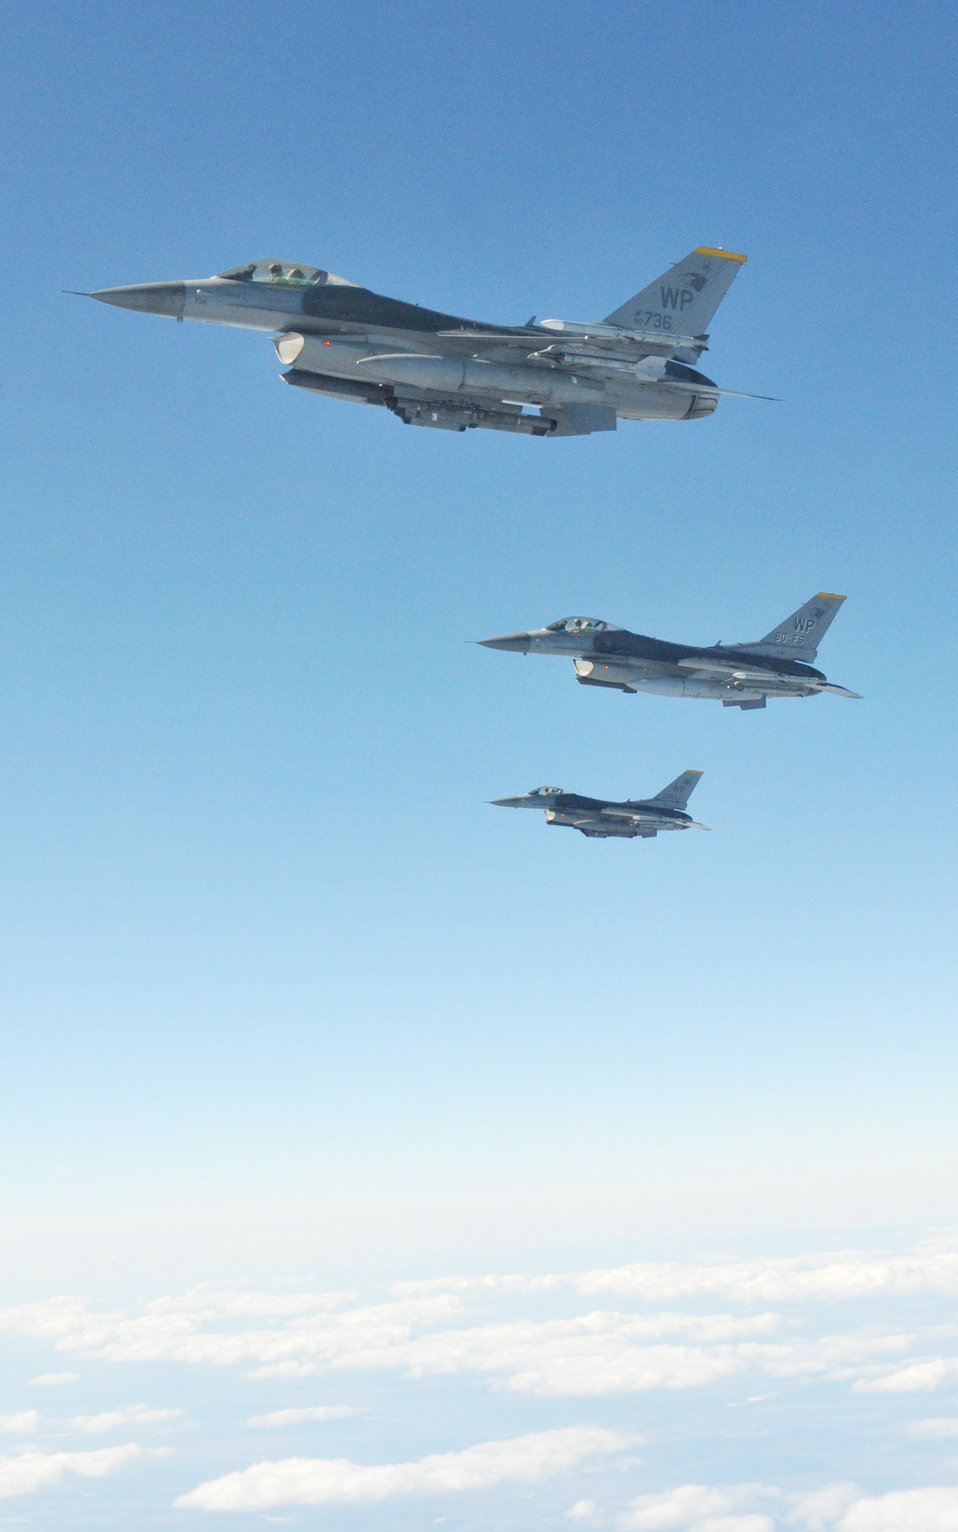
F-16s participate in Red Flag-Alaska

Three F-16 Fighting Falcons pilots maintain their position as they wait for the last aircraft of their four-ship formation to refuel during Red Flag-Alaska April 27, 2010. Pilots are with the 8th Fighter Wing at Kunsan Air Base, South Korea.